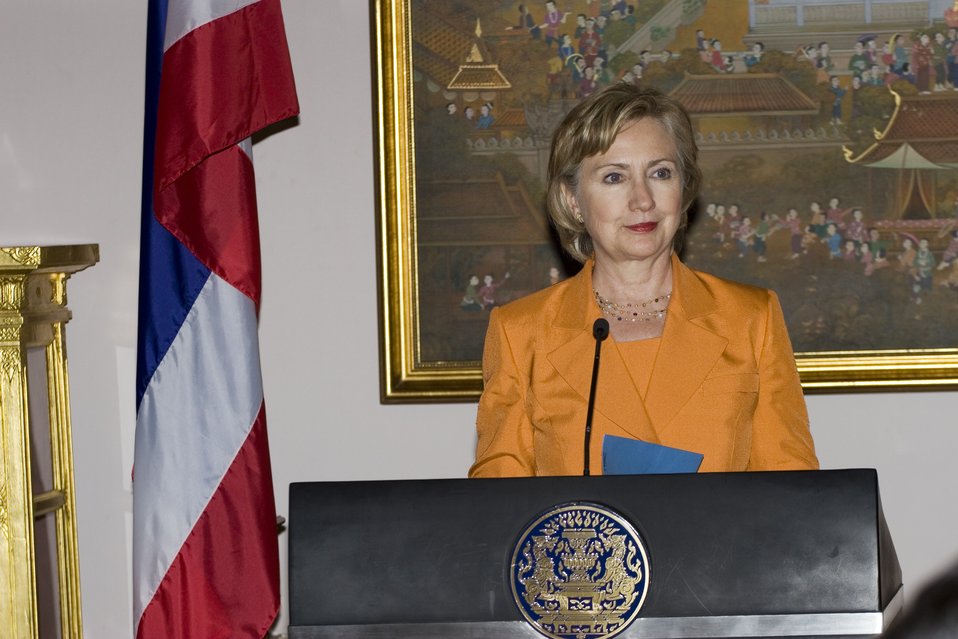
U.S.-Thailand Bilateral Meeting

U.S. Secretary of State Hillary Rodham Clinton answers questions from the press following the bilateral meeting at Government House in Bangkok, Thailand July 21, 2009.